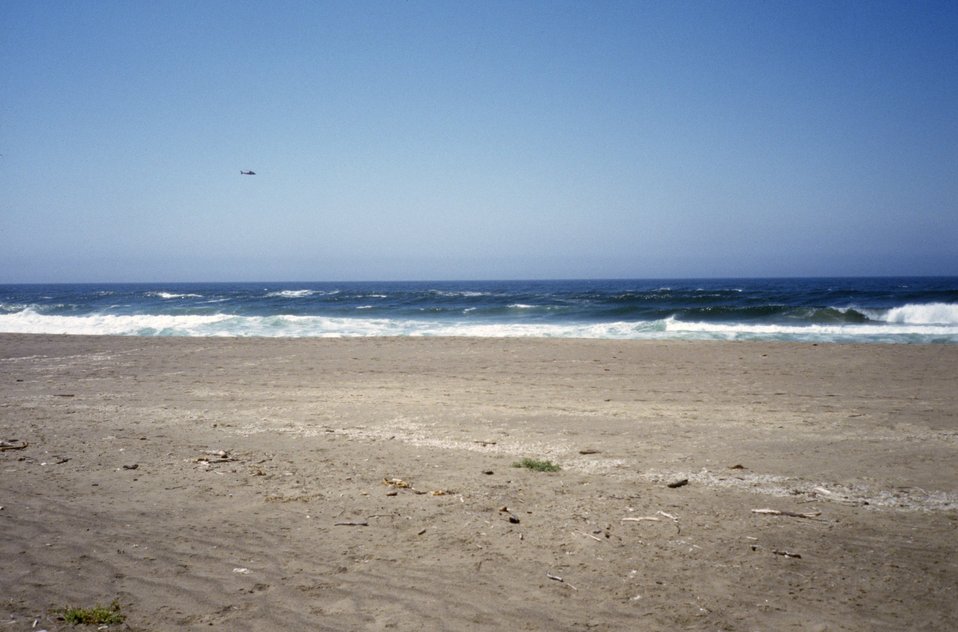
Point Reyes Great Beach. Possibly a Coast Guard helicopter heading north.